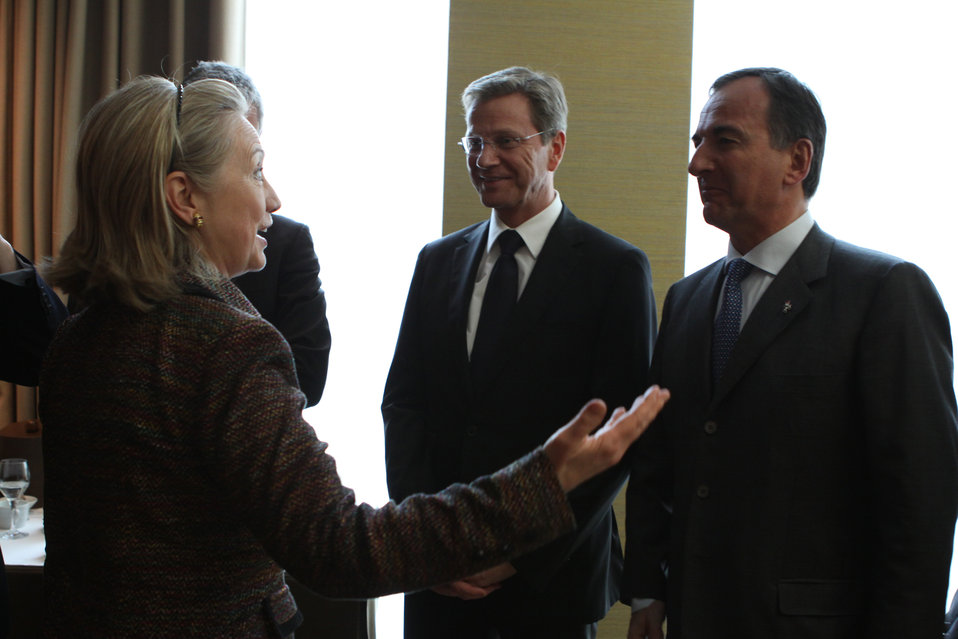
Secretary Clinton Speaks With Italian, German Foreign Ministers Frattini and Westerwelle

U.S. Secretary of State Hillary Rodham Clinton speaks with Italian Foreign Minister Franco Frattini, right, and German Foreign Minister Guido Westerwelle, center, at a meeting of the Quint at the Hotel Intercontinental in Geneva, Switzerland, on February 28, 2011.